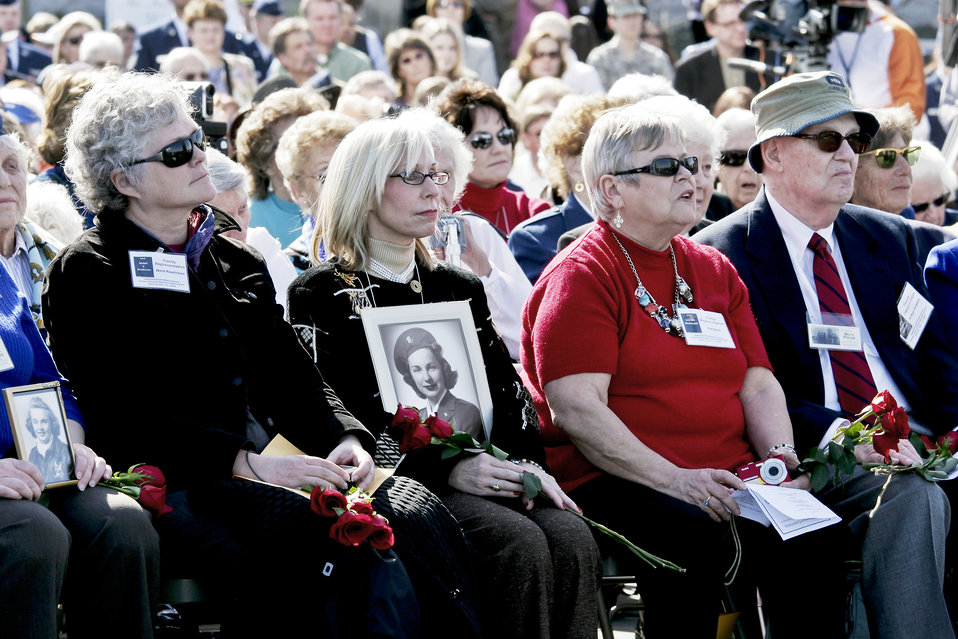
Women pilots of World War II inspired generations

Cheryl Marie Michell Van Riper holds the photo of her aunt, Marie Mitchell, a deceased pilot who flew with the Women Airforce Service Pilots during World War II during a wreath-laying and remembrance ceremony for all 1,102 pilots March 9, 2010, at the Air Force Memorial in Arlington, Va. The ceremony was part of a two-day event in which all pilots will receive the Congressional Gold Medal at the U.S. Capitol for their service.